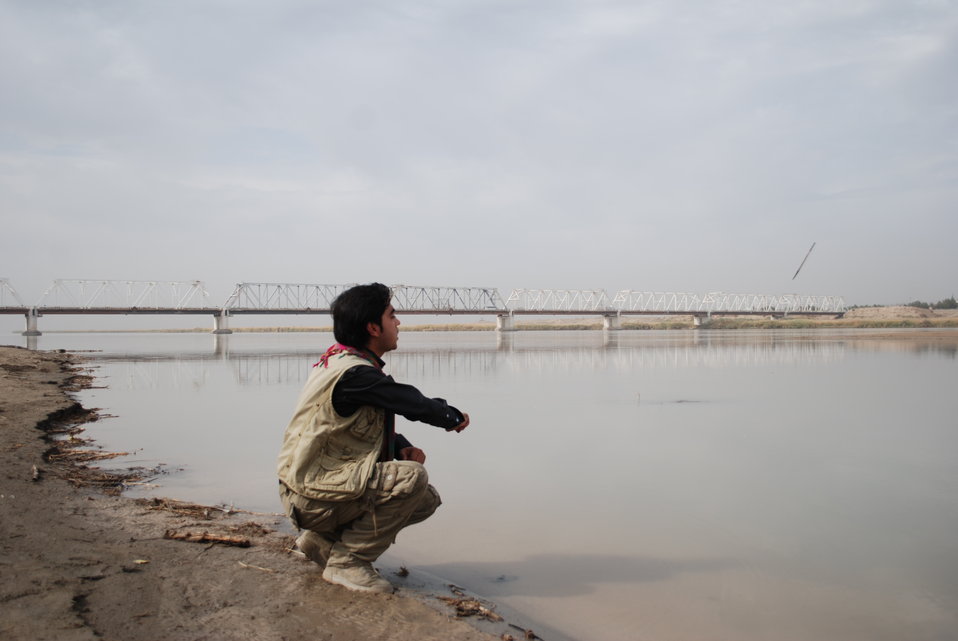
'On the Road' in Balkh Province